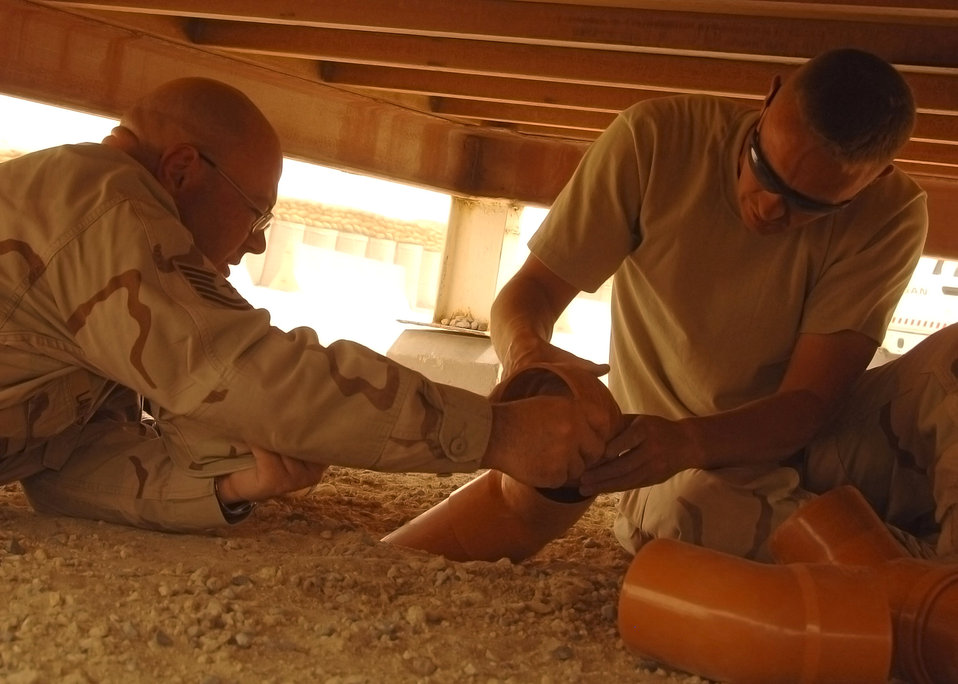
Working dog kennels receive massive renovation

Tech. Sgts. Michael Biggs (right) and Joseph Landree, deployed with the 386th Expeditionary Civil Engineer Squadron, prepare to install a PVC pipe under a new K-9 kennel on July 11 at a base in Southwest Asia. The 386th Expeditionary Civil Engineer Squadron is completing a project to increase the square footage of the K-9 kennels for the 386th Expeditionary Security Forces Squadron. Sergeant Biggs and Sergeant Landree are both deployed from the 108th Air Refueling Wing, McGuire Air Force Base, N.J.